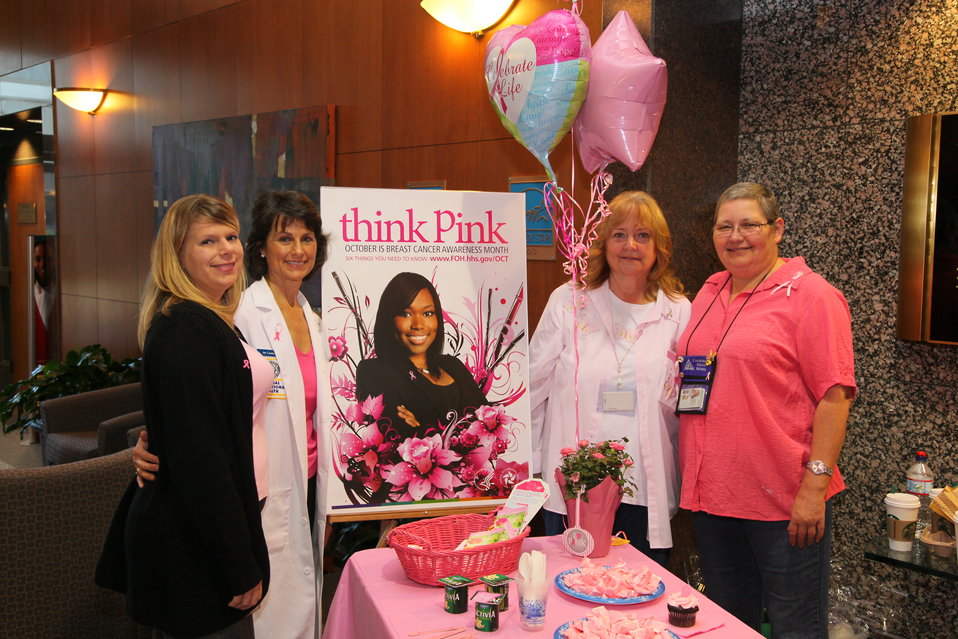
October is Breast Cancer Awareness Month

Think pink. Think health. Think breast cancer awareness. October is Breast Cancer Awareness month and to bring that awareness Jan Luoma (second from left), Federal Occupational Health nurse, organized an event at the Sacramento District headquarters in Sacramento, Calif., Oct. 5, 2011. Joining Luoma at the event were (from left to right) Melanie Prescott, student industrial hygienist; Char Woffinden, procurement technician; and Kathy Kroeger, realty specialist. Luoma encouraged all to visit www.FOH.hhs.gov/Oct to learn more, including the “Six things you need to know about Breast Cancer.”